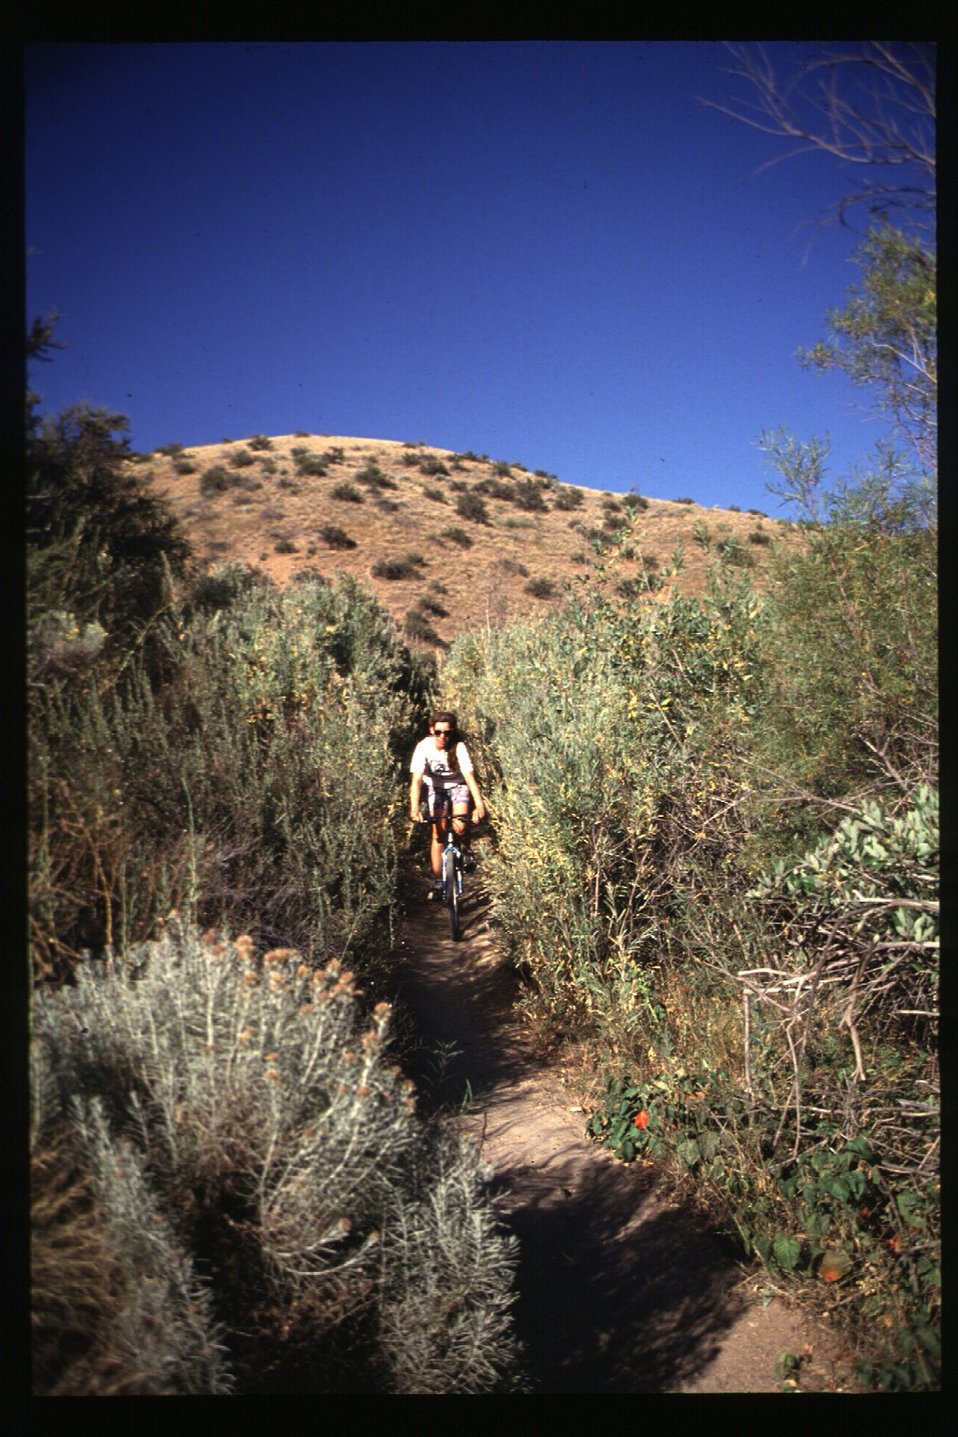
Recreation Scenic Biker Shoshone Field Office USRD Upper Snake River District